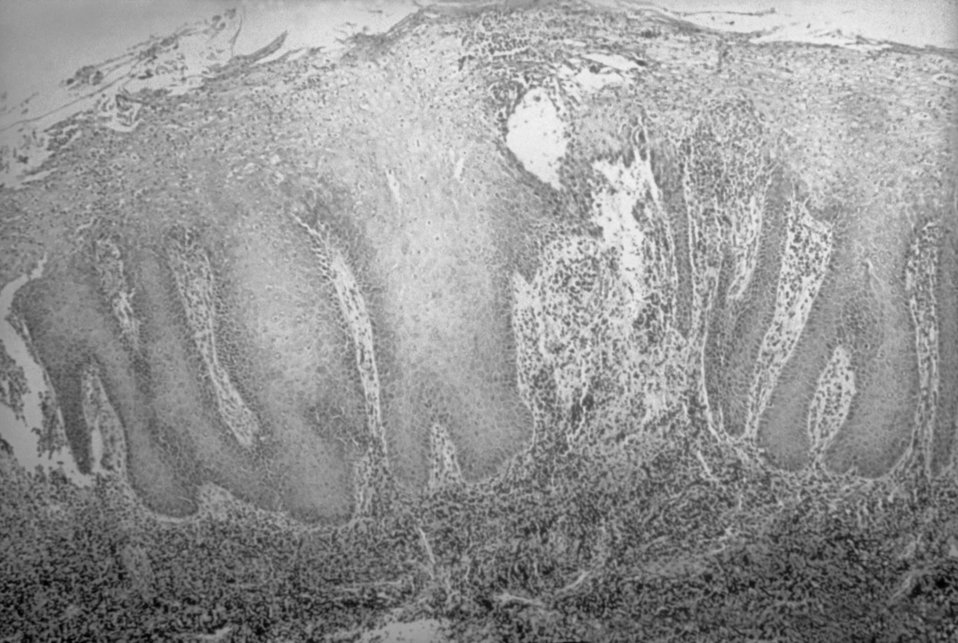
A photomicrograph of a condyloma latum lesion, indicative of secondary syphilis.